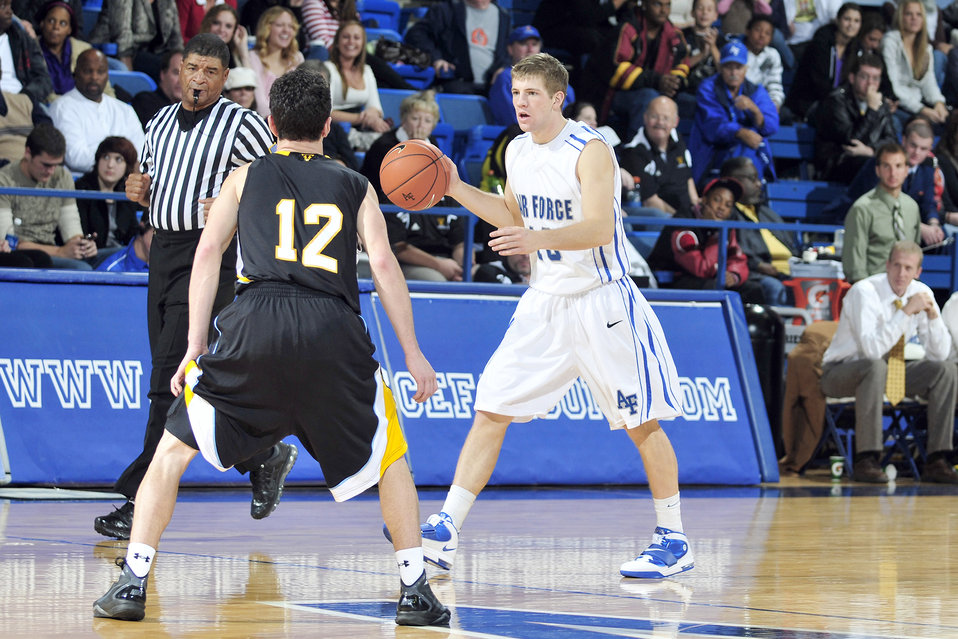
Falcons vs UCCS

Falcon guard Todd Fletcher walks the ball up the court as opponent Chase Richards defends during the Air Force home opener against the University of Colorado at Colorado Springs Nov.14 2010, at the Academy's Clune Arena in Colorado Springs, Colo. The Falcons defeated UCCS 66-53 behind a balanced offensive attack that included 42 percent shooting from the 3 point range.